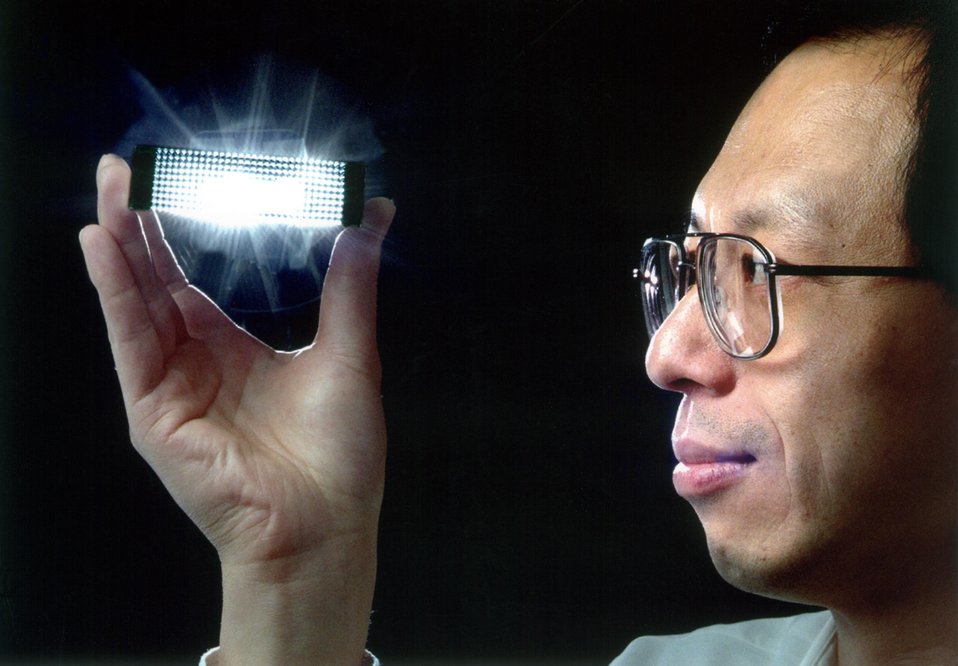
SNL RESEARCHER HOLDS AN EARLY PROTOTYPE OF THE PHOTONIC LATTICE AS LIGHT PASSES THROUGH IT.

THIS SANDIA RESEARCH IS LISTED AMONG TOP TEN BREAKTHROUGHS FOR 1999 IN THE JOURNAL, SCIENCE. IT WAS CITED AS A MAJOR CONTRIBUTION TO ADVANCING THE FIELD OF PHOTONICS, THE CONTAINMENT AND BENDING OF LIGHT.